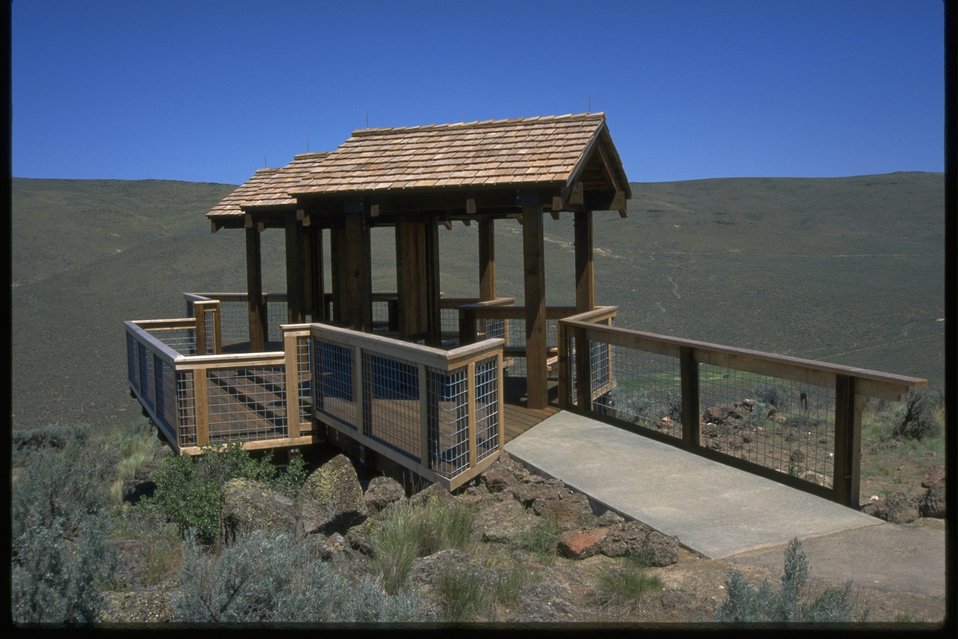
Trail ramada at the NHOTIC.